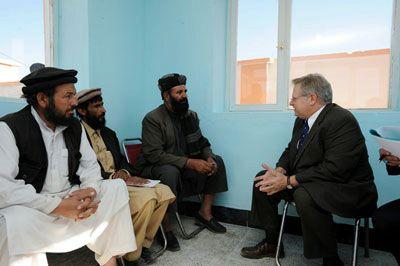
Assistant Secretary Schwartz Converses With Elders

U.S. Assistant Secretary of State for Population, Refugees, and Migration Eric Schwartz converses with elders at a refugee reintegration program site near Kabul, Afghanistan, on October 10, 2010. Assistant Secretary Schwartz then traveled to Afghanistan from October 10-12, 2010. He began with a visit to a rural village comprised primarily of returnees, where U.S. funds have supported a healthcare facility that will now be run by the Afghan Ministry of Public Health. In Mazar-e-Sharif, he visited a government-provided land allocation site for returnees, as well as a center for Afghan women returnees focused on literacy training, heath education, rights awareness and cultural studies. In Kabul, he toured the Orthopedic Hospital run by the International Committee for the Red Cross.